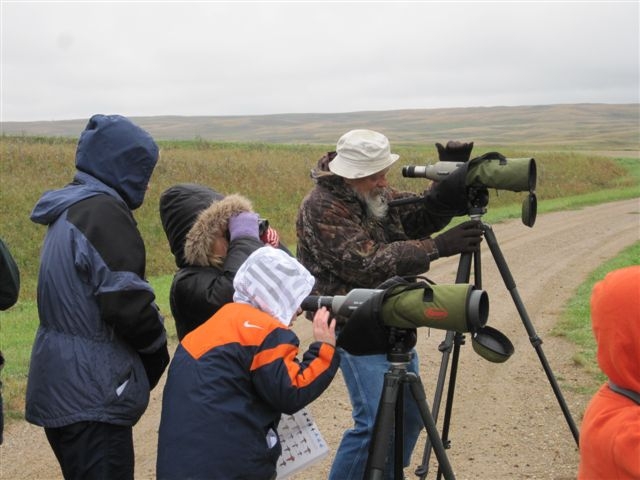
Lostwood National Wildlife Refuge

A Lostwood NWR volunteer leads a bird viewing outing during 'Discover Lostwood,' an annual event hosted by the Friends Group for local elementary schools.